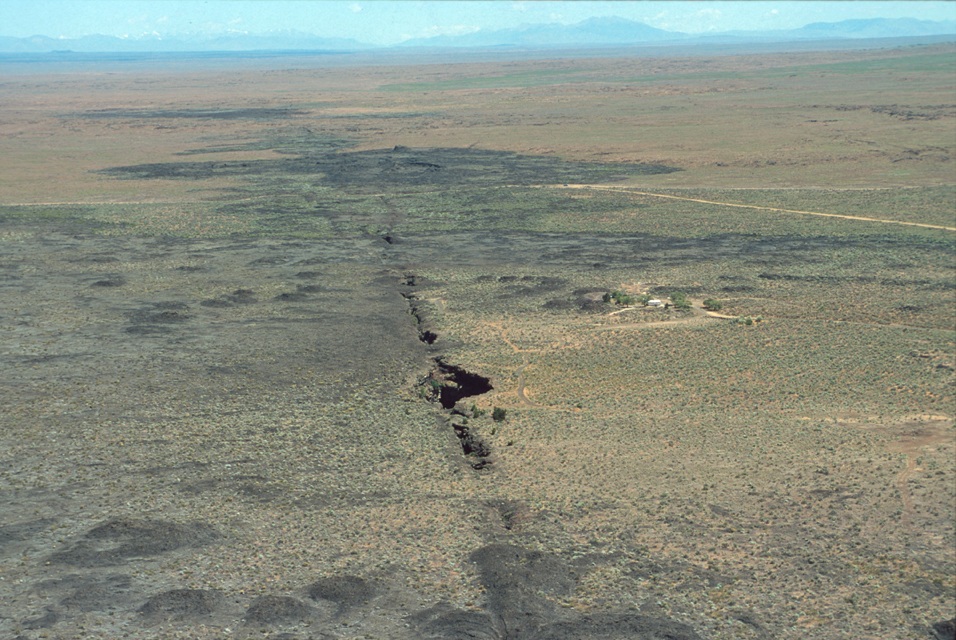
Shoshone Field Office USRD Upper Snake River District